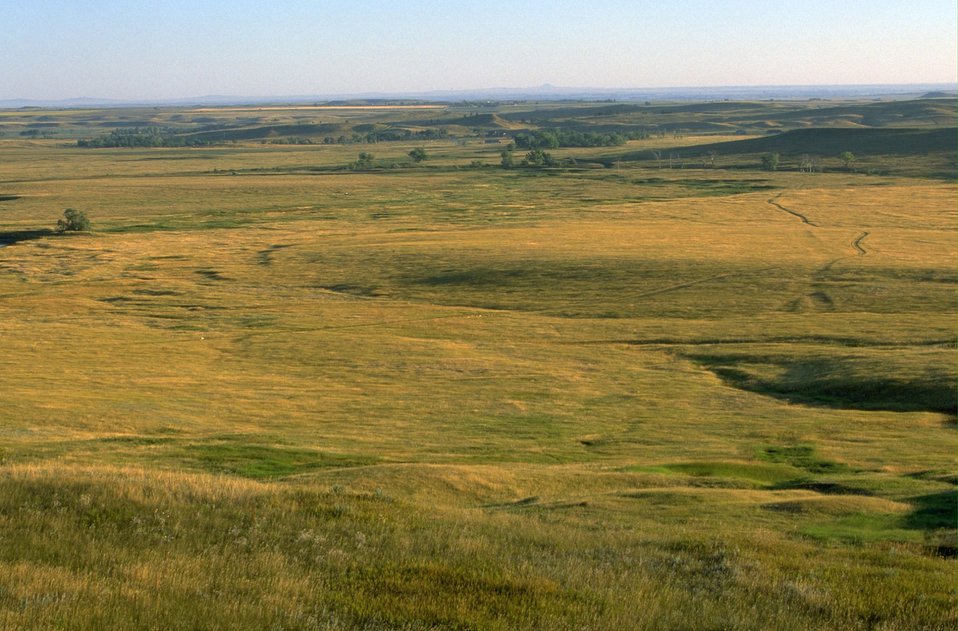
Grassland Vista